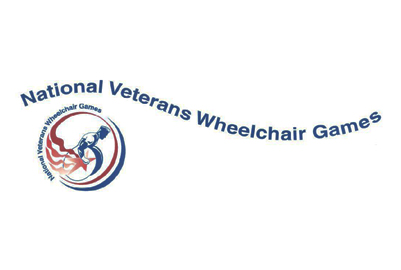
30th National Veterans Wheelchair Games